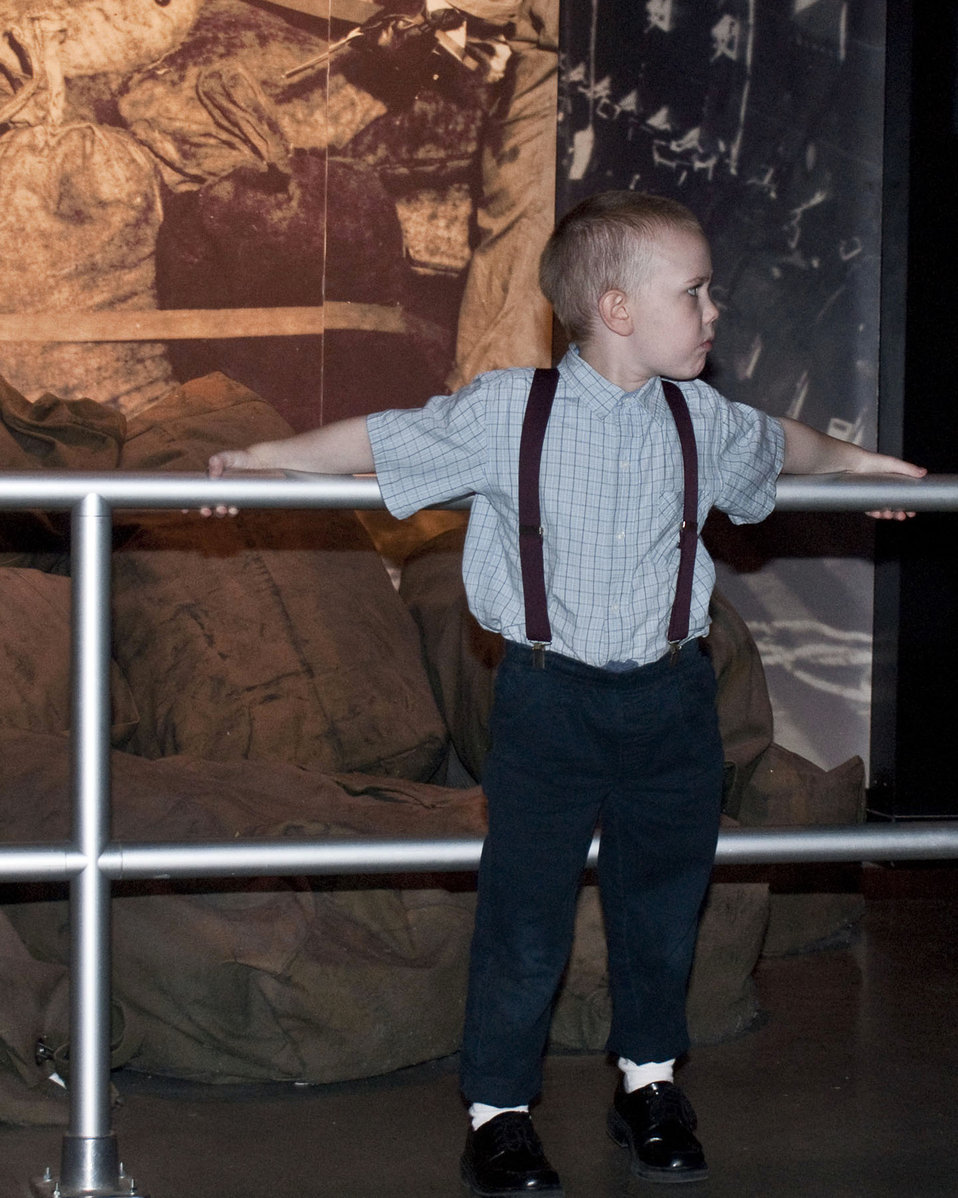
Huge crowd turns out for Night at the Air Force Museum

One actor waits for the